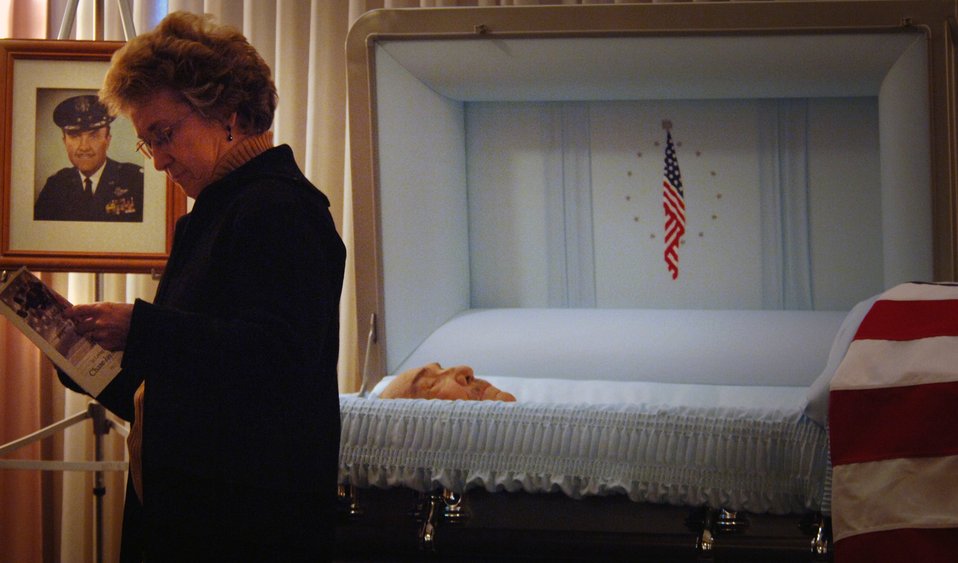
Lt. Col. Chase Nielsen service held March 28

Lt. Colonel Chase J. Nielsen's body lies in state as friends, family and fellow veterans pay their last respects at his memorial service in Hyrum, Utah March 28. Colonel Nielsen was one of the few remaining members of the famed Doolittle Raiders. The members of the Doolittle Raiders reached national acclaim in 1942 after launching the first successful aerial bombing raid on Tokyo, Japan as retaliation for the Japanese bombing of Pearl Harbor, Hawaii in December of 1941.